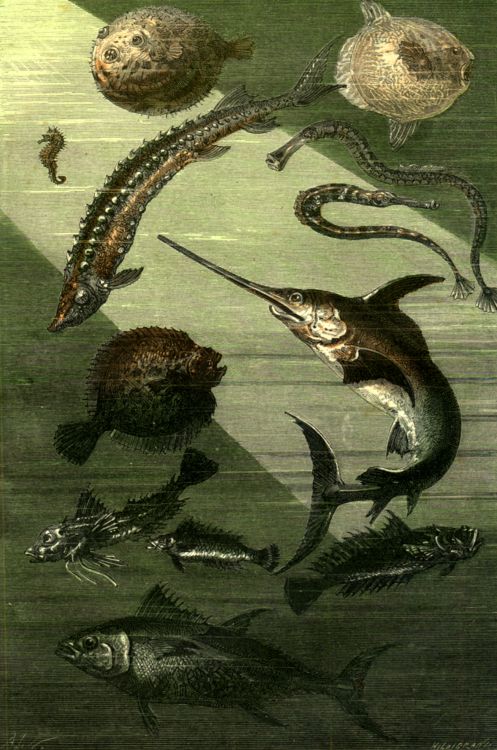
An illustration from Jules Verne's novel 'Twenty Thousand Leagues Under the Sea' (1866-69) drawn by George Roux. Polski: Ilustracja powieści Juliusza Verne'a 'Dwadzieścia tysięcy mil podmorskiej żeglugi' (tytuł przekładany także jako: 'Dwadzieścia tysięcy mil podmorskiej żeglugi około świata', '20.000 mil podmorskiej żeglugi'; 1866-69, I wyd. 1870) autorstwa Alphonse'a de Neuville lub Édouarda Riou. Français : Jules Verne 'Vingt mille lieues sous les mers' (1866-69), dessins par Alphonse de Neuville ou Édouard Riou. Orginal description taken from the book: